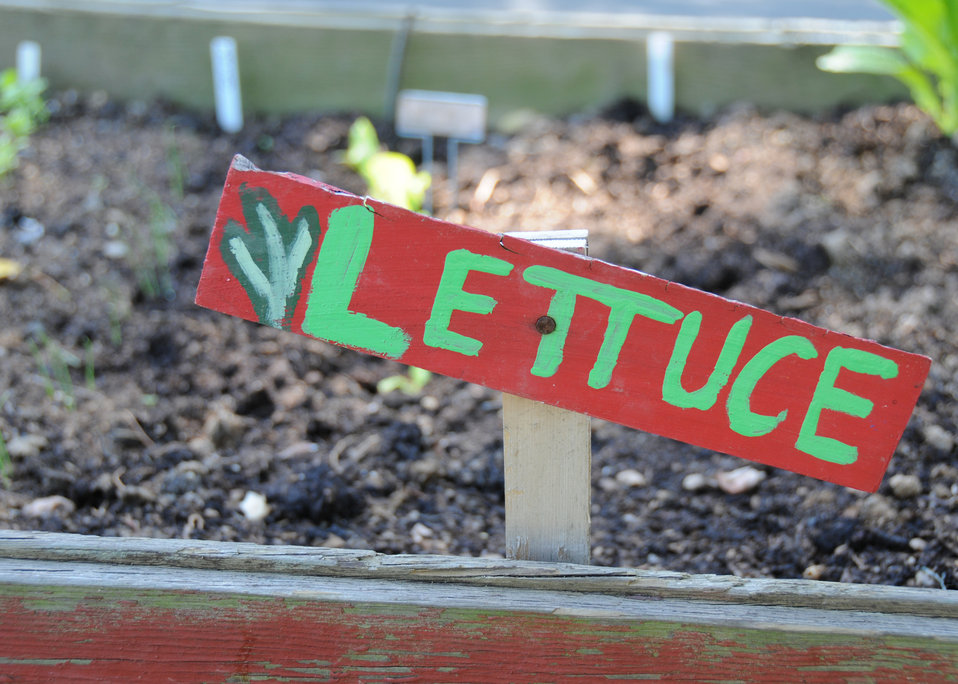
Gardening Blog Photo 2

At T.C. Williams High School in Alexandria, VA, students learn green gardening methods